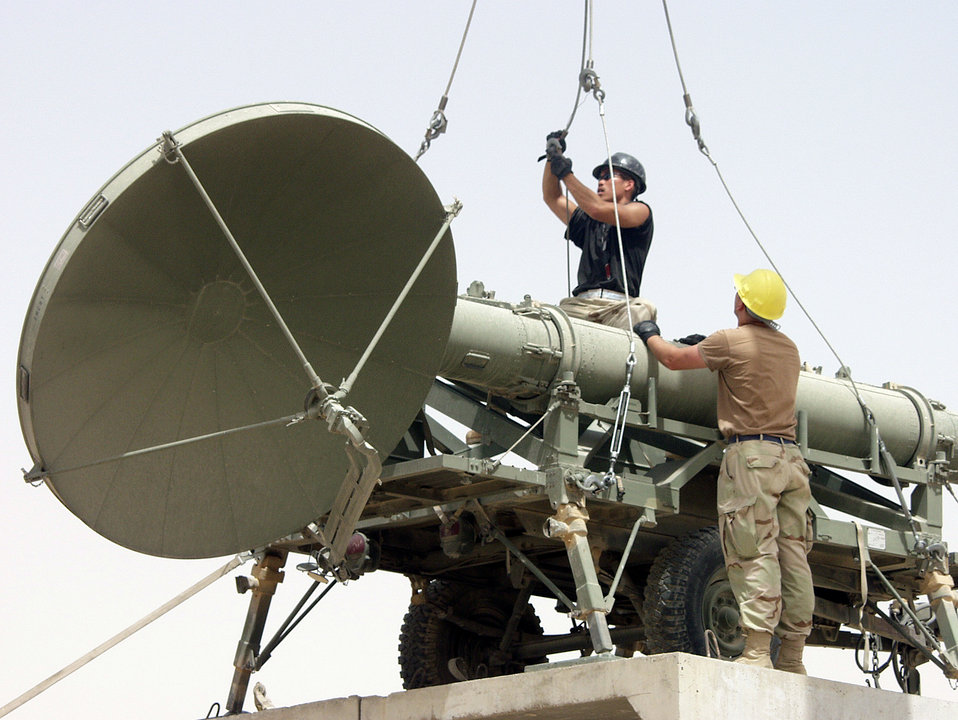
Redeployment

OPERATION IRAQI FREEDOM - Senior Airmen Bryan Phan and Philip Olson, members of the 386th Expeditionary Air Control Squadron, prepare a quick reaction antenna for removal from a 15 foot high platform by attatching a lift sling for the crane. The squadron removed many of its large base assets to redeploy home after providing constant air control over the skies of southern Iraq.